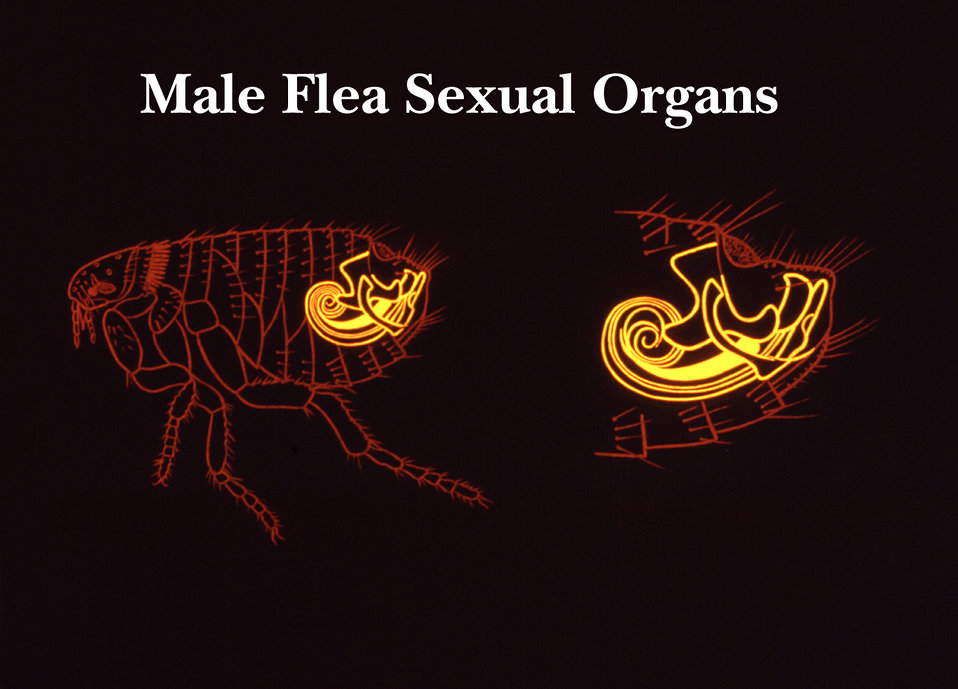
This illustration shows some of the identifying morphologic characteristics of male fleas in general.